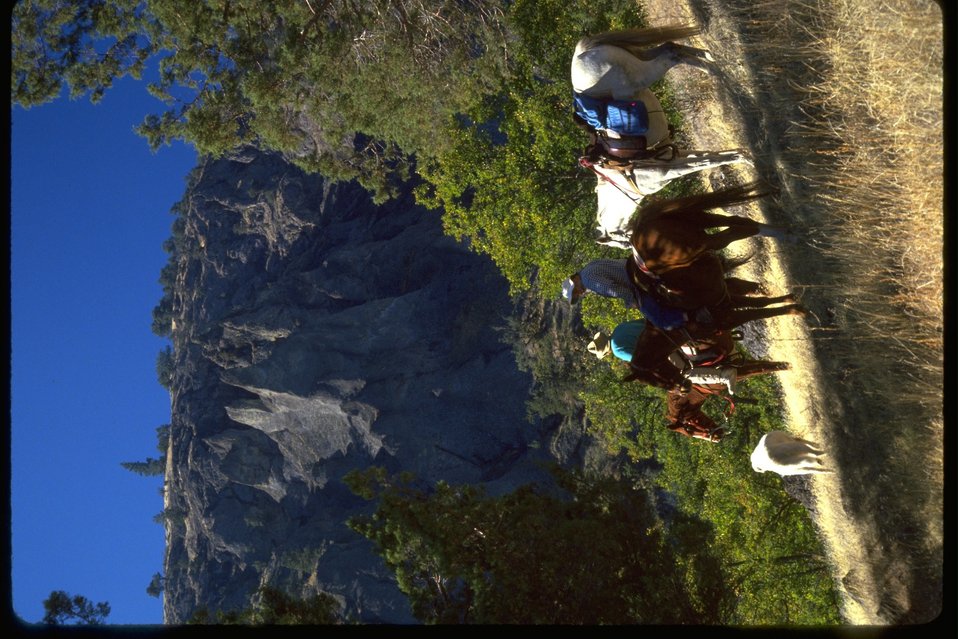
Dave Willis and Wendell Ward at Lower Camp Creek riding horses.